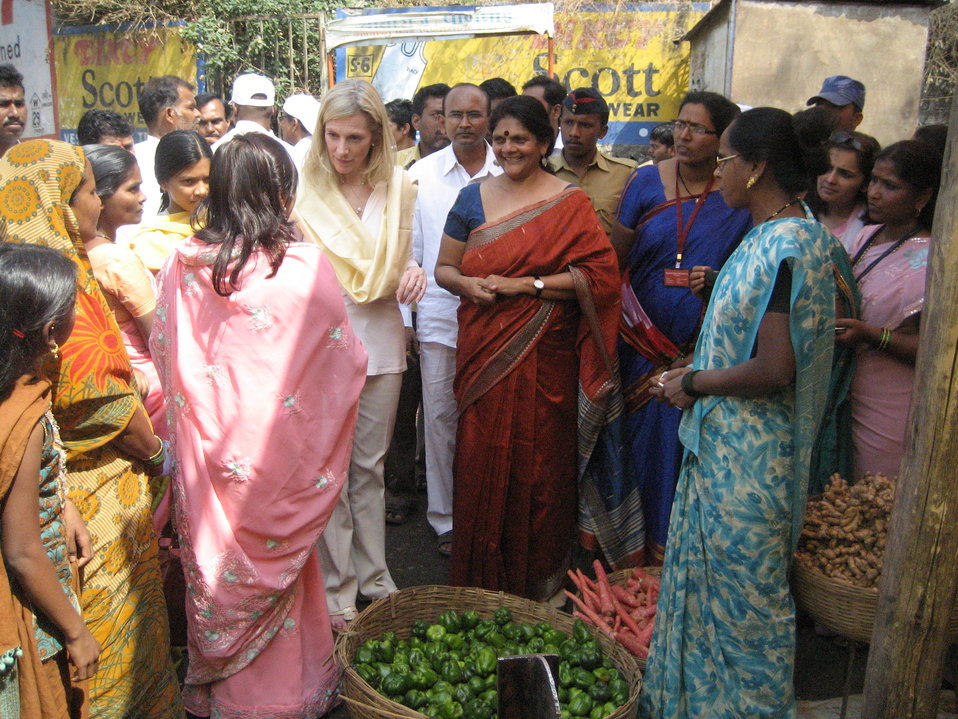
Lael Brainard's Visit to India

Under Secretary for International Affairs Lael Brainard visited India this week to highlight the growing economic partnership between the United States and India and to discuss how trade and investment presents dramatic and expanding opportunities to create high-quality jobs in both countries.